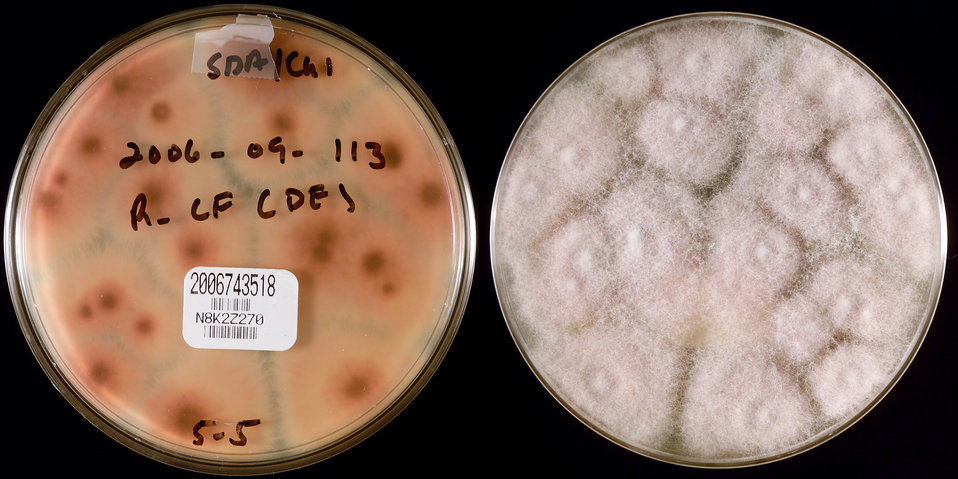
As in PHIL # 8973, this image depicted two sides of a Petri dish, which had been inoculated with a specimen retrieved from the fluid from the inside of the right side of a contact lens case, from a Minnesota Fusarium keratitis-patient, and had subsequently grown a filamentous colony of Fusarium fujikuroi species complex [FFSC] fungal organisms. The type of agar medium in the case of this specimen was Sabouraud Dextrose (SAB). While it is not unusual for Fusarium to cause keratitis, it was the number of affected individuals, which had increased dramatically, predominantly in persons wearing contact lenses, that had warranted this epidemiologic study. The laboratory received cultures which came from two sources: Fusarium spp. isolated from the eyes of patients with fungal keratitis, and cultures from contact lenses, cases and/or lens solution.